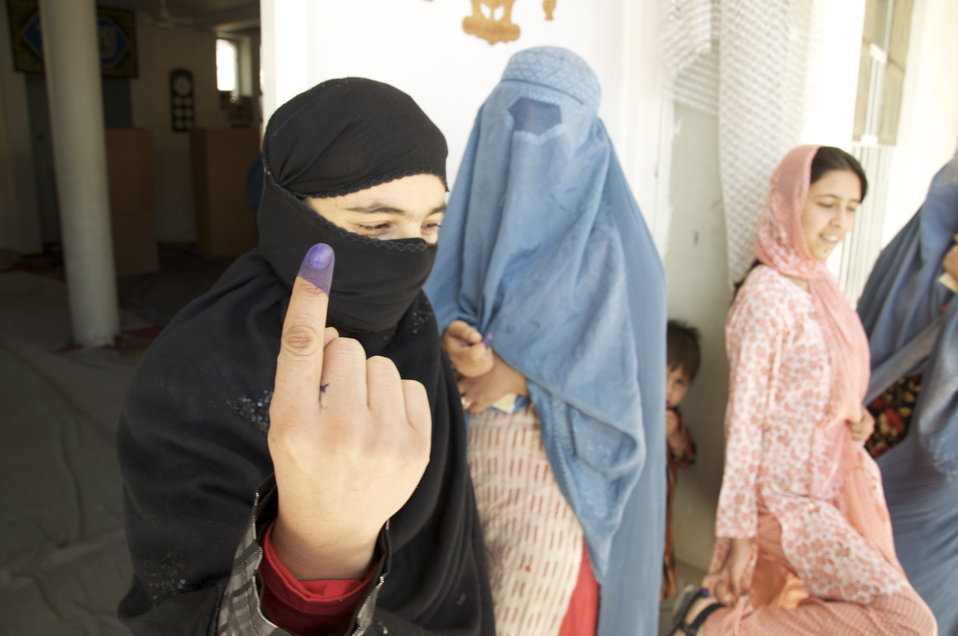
Women Voters